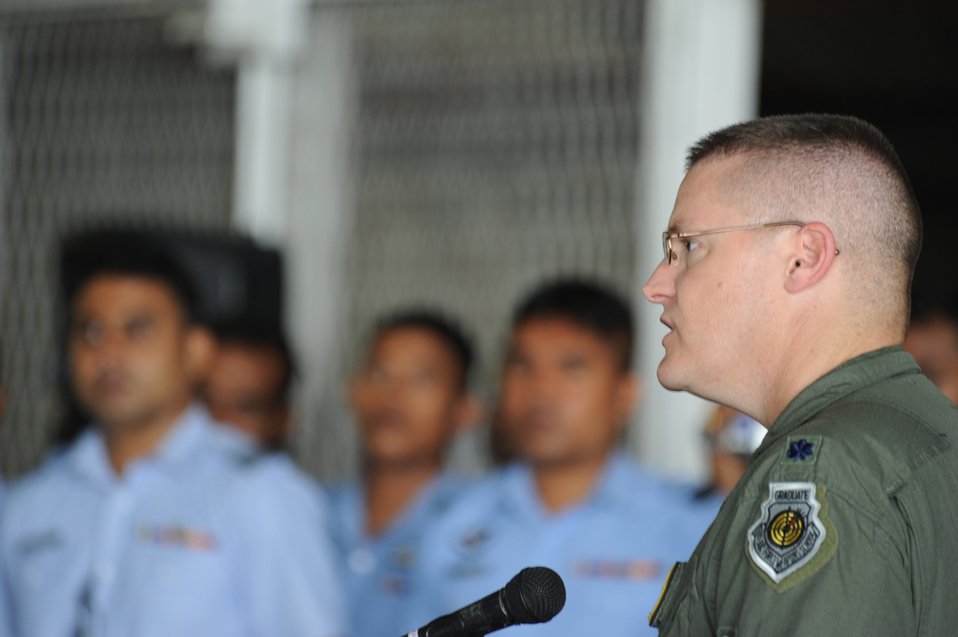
PACIFIC AIRLIFT RALLY 2011

Lt. Col. Tim Rapp makes a few opening remarks for the start of Pacific Airlift Rally 2011 Aug. 22, 2011, at Ratmalana Airport, Colombo, Sri Lanka. PAR is a Pacific Air Force sponsored, biennial multilateral tactical military airlift symposium. Airmen from the Royal Australian Air Force, Sri Lankan Air Force, Royal Malaysian Air Force and U.S. Air Force are participating in the one-week exercise. Rapp is the commander of the 36th Expeditionary Squadron.